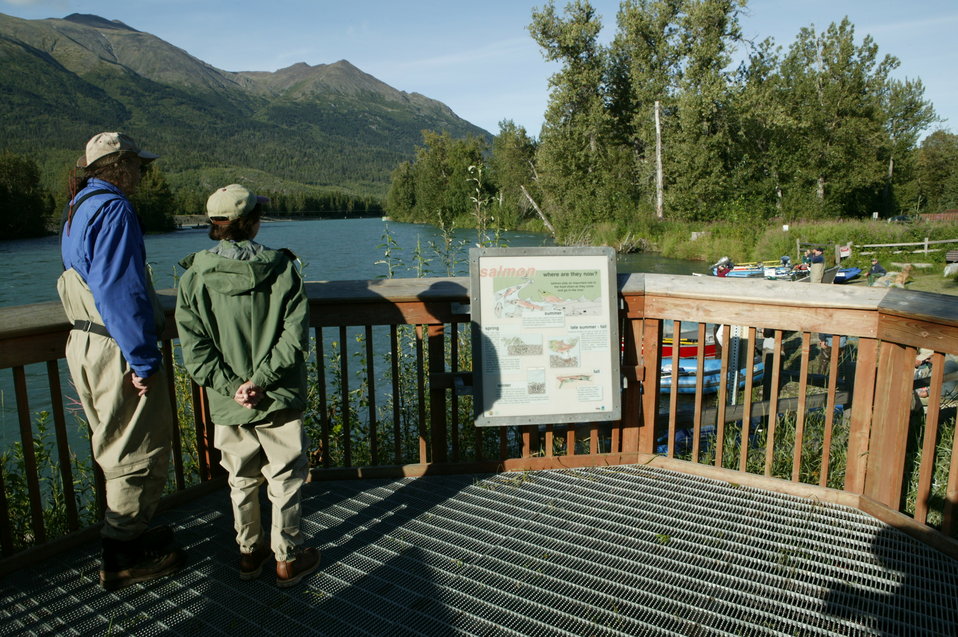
Intrepretation Panel on Salmon Life Cycle

Anglers read about the life cycle of the red (sockeye) salmon at an overview at the confluence of the Russian and Kenai Rivers.